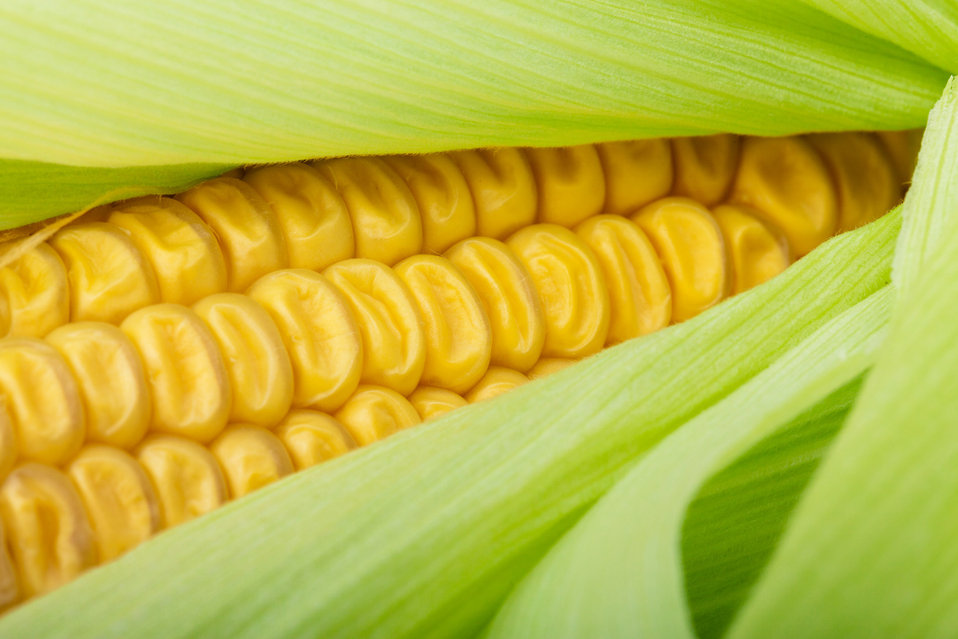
Fresh corn detail

Detail of a fresh corn.